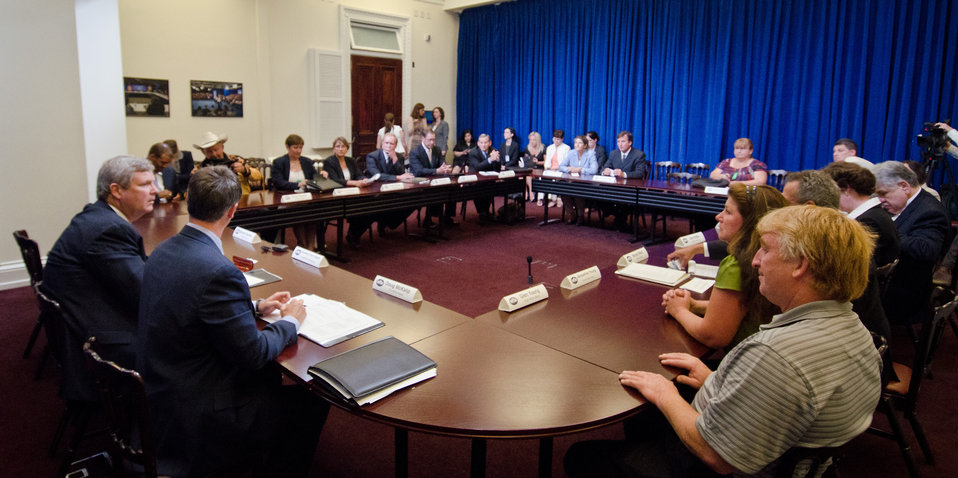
(Clockwise from front and center) Doug McKalip, Agriculture Secretary Tom Vilsack, Philip Johnson Haynie, III, Ross Racine, Ruth Hambleton, Linda Barnes, Mark Timm, Everett Max Dobrinski, Eric Benjamin Rund, Crista Carrell, Rick Huszagh, Linda Roberson, Lance Morgan, Deborah Kane, Jason Frerichs, Roland Arriola, Sue Noble, Bruce Ward, Jacqueline Young, and Glen Young attended a meeting at the White House, in Washington, DC, on Wednesday, Jul. 6, 2011. President Barack Obama, Secretary Vilsack, and the President's Domestic Policy Adviser Melody Barnes along with rural communities leaders from across the country came together for the White House Rural Champions of Change event whose aim is to strengthen rural communities and promote economic growth. Prior to coming here, they were posed with a question about, what should/should not the government be doing to strengthen rural communities and promote economic growth.